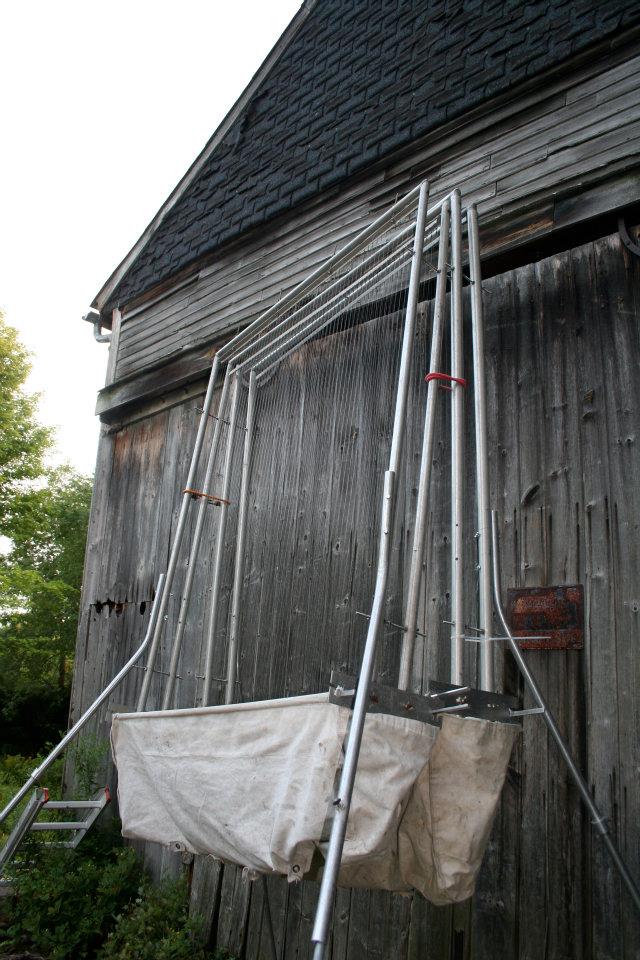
Harp trap used to capture bats leaving barn